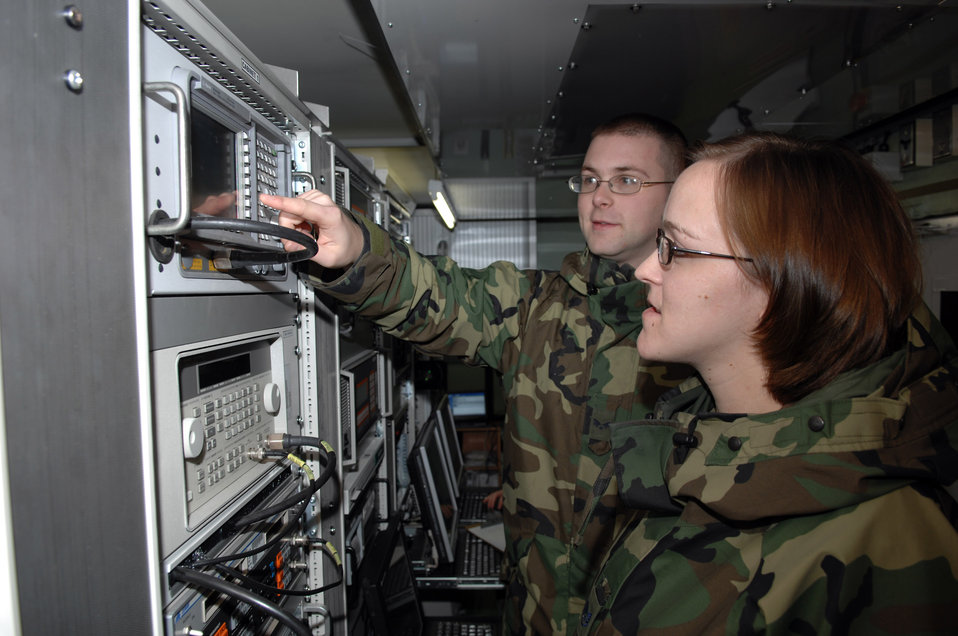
Ramstein team gives planners Eagle Vision

Senior Airman Adam Walters and Staff Sgt. Susanne Dehne program the setting on a spectrum analyzer Feb. 29 at Ramstein Air Base, Germany. The analyzer measures the strength of the signal received by the Eagle Vision-1 antenna from commercial satellites. Airman Walters is a commercial satellite imagery geospatial analyst and Sergeant Dehne is an imagery collection analyst.